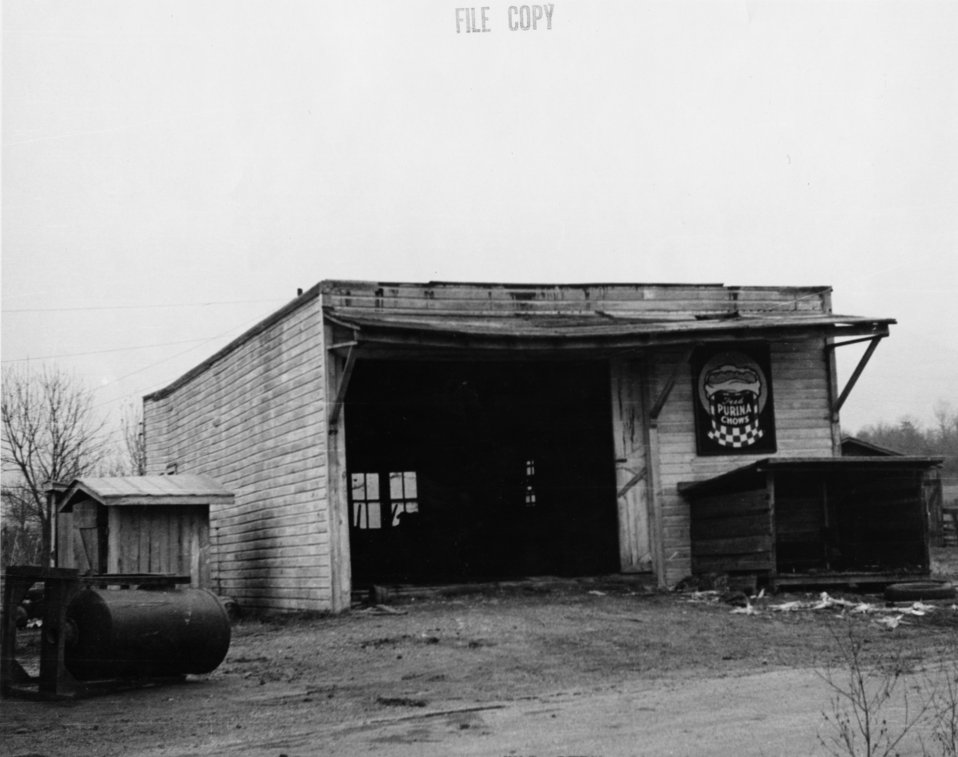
Early settlers at Oak Ridge